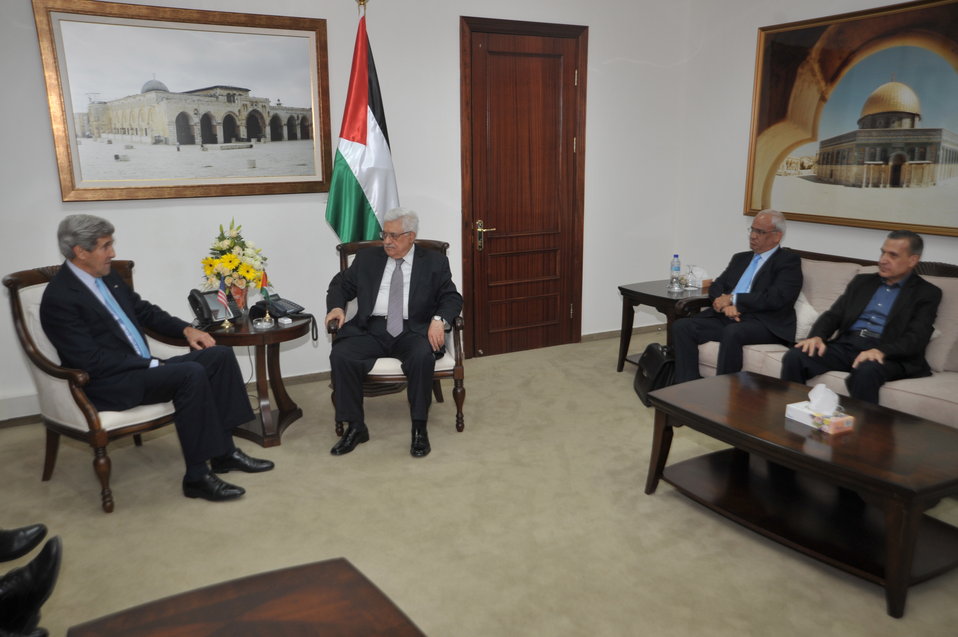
Secretary Kerry Meets With Palestinian Officials

U.S. Secretary of State John Kerry speaks with President Mahmoud Abbas, chief negotiator Saeb Erekat, and presidential Spokesman Nabil Abu Rudeineh at the Palestinian Authority headquarters in Ramallah, West Bank, on June 30, 2013.